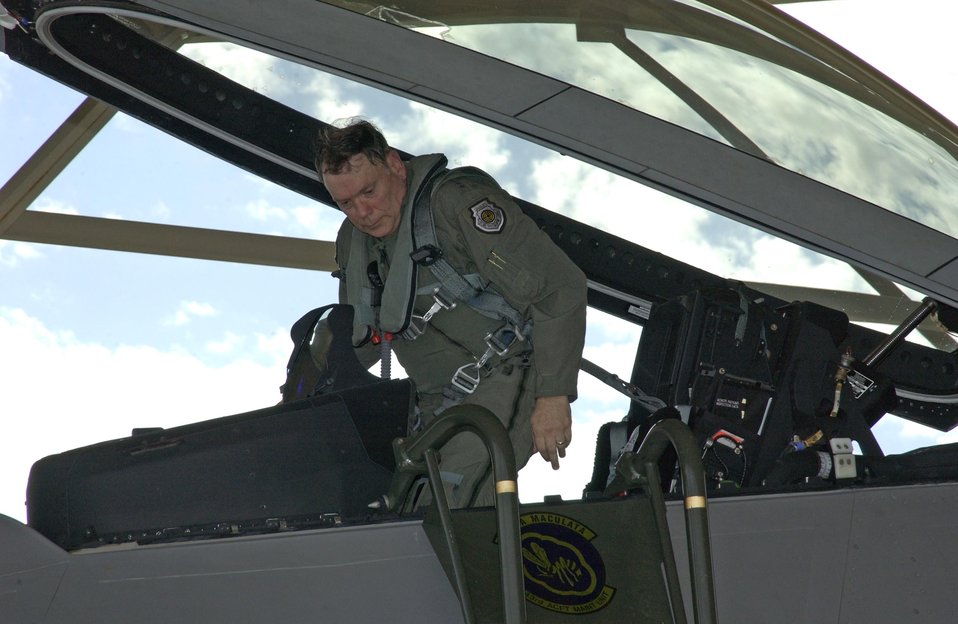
General Jumper qualifies in F/A-22 Raptor

TYNDALL AIR FORCE BASE, Fla. -- Air Force Chief of Staff Gen. John P. Jumper exits an F/A-22 Raptor following his qualification flight here. The general said he participated in a 2-week qualification training program in the Raptor so he could speak with authority on the program's importance.